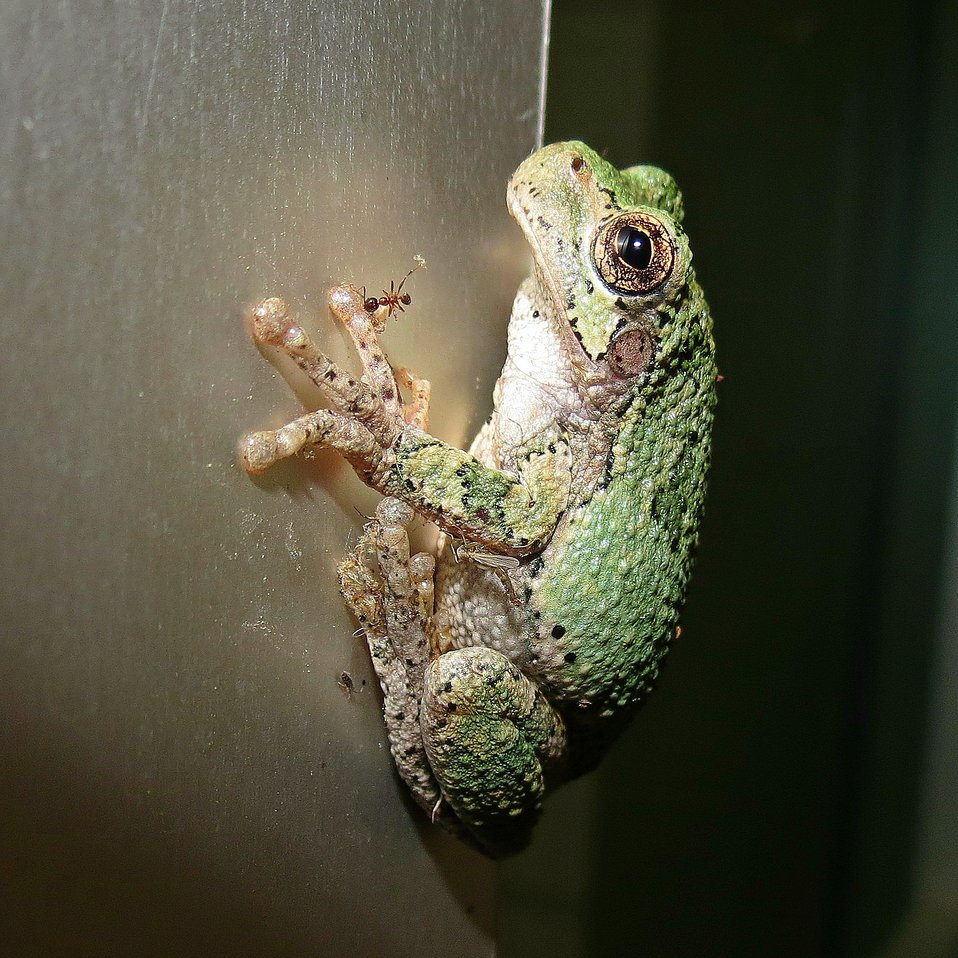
Grey treefrog caught catching small insects attracted to the exterior light of the Neosho National Fish Hatchery visitor center